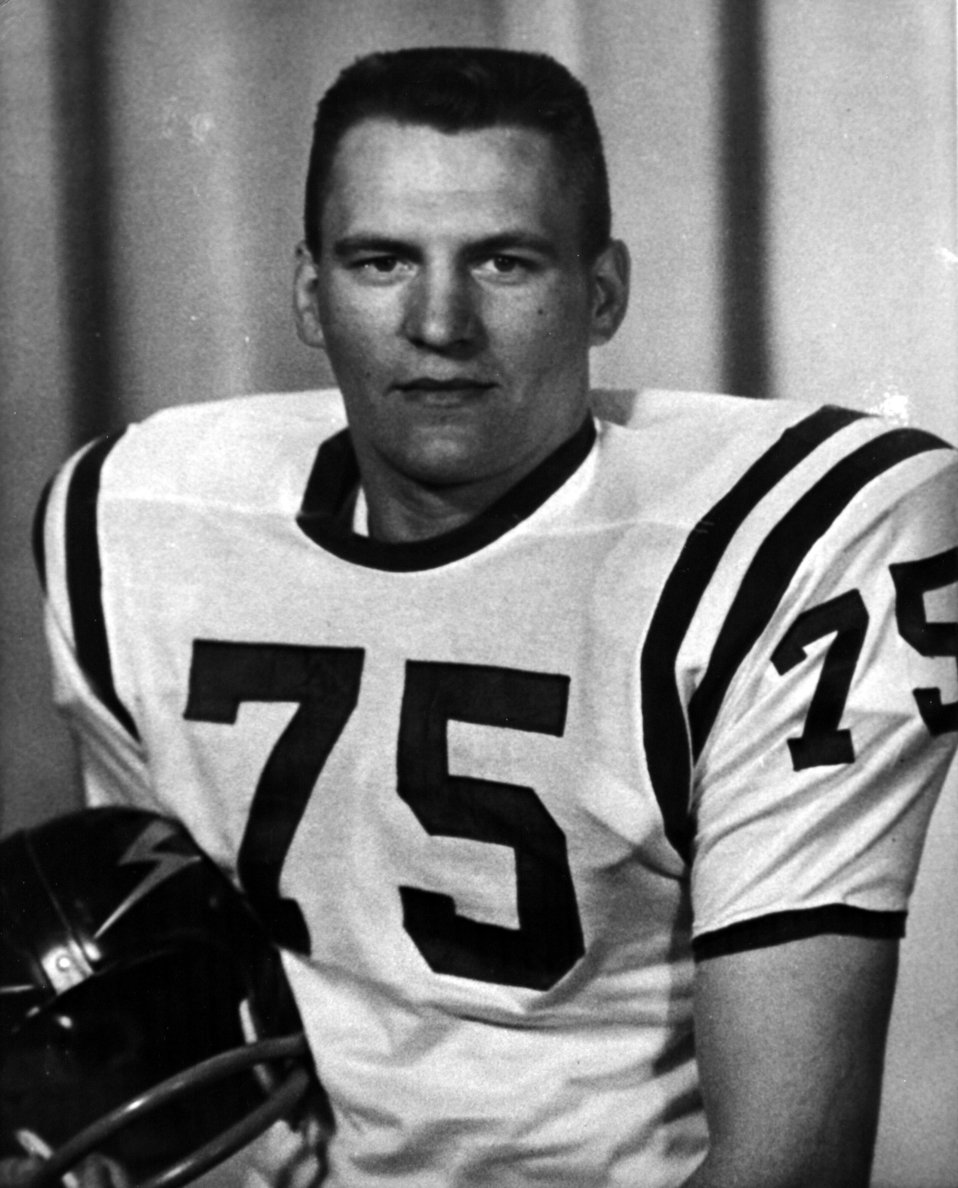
Academy announces inaugural class into athletic hall of fame

Brock Strom is in the inaugural class for induction into the Air Force Academy Athletic Hall of Fame. The 1959 Air Force Academy graduate was the captain of the academy's undefeated football team in 1958 and helped lead the team to the Cotton Bowl.